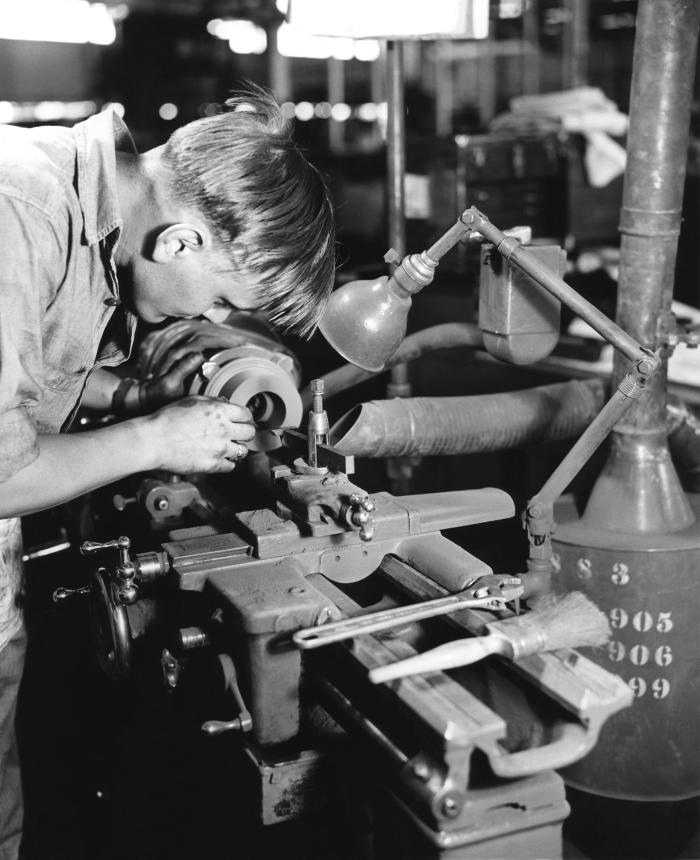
This historical photograph was provided by the Center for Disease Control's (CDC), National Institute for Occupational Safety and Health (NIOSH). The image depicted a male industrial worker in a Carboloy� plant as he was performing a task on a grinding wheel. Carboloy� is an alloy created by combining tungsten with cobalt or nickel and carbon. The alloy is extremely hard, harder than steel, and is used to cut steel, porcelain, quartz and other brittle materials. The potential worker health problems associated with industrial metal grinding include respiratory and dermatologic hazards from inhalation and contact with fungi- and bacteria-contaminated synthetic metal-working fluids, oil mists, and grinding dust in the machining areas.